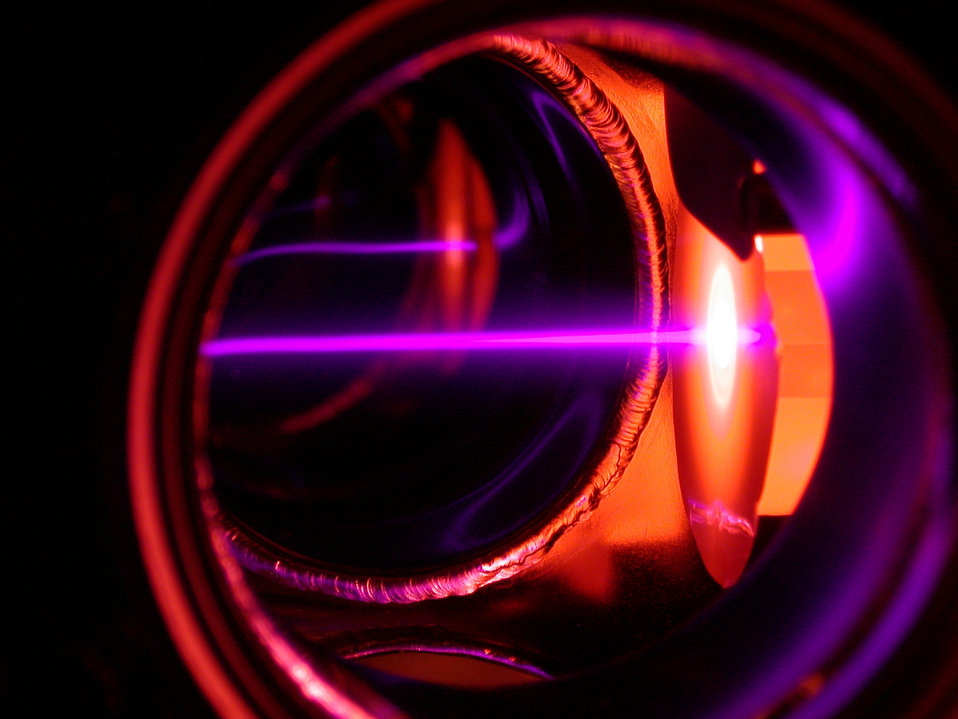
Trapping Erbium

A purple laser beam slows erbium atoms (the purple beam traveling right to left) emerging from an oven at 1300°C, in preparation for trapping and cooling. The unusual properties of erbium atoms and the new capability to trap them could lead to development of novel technologies.